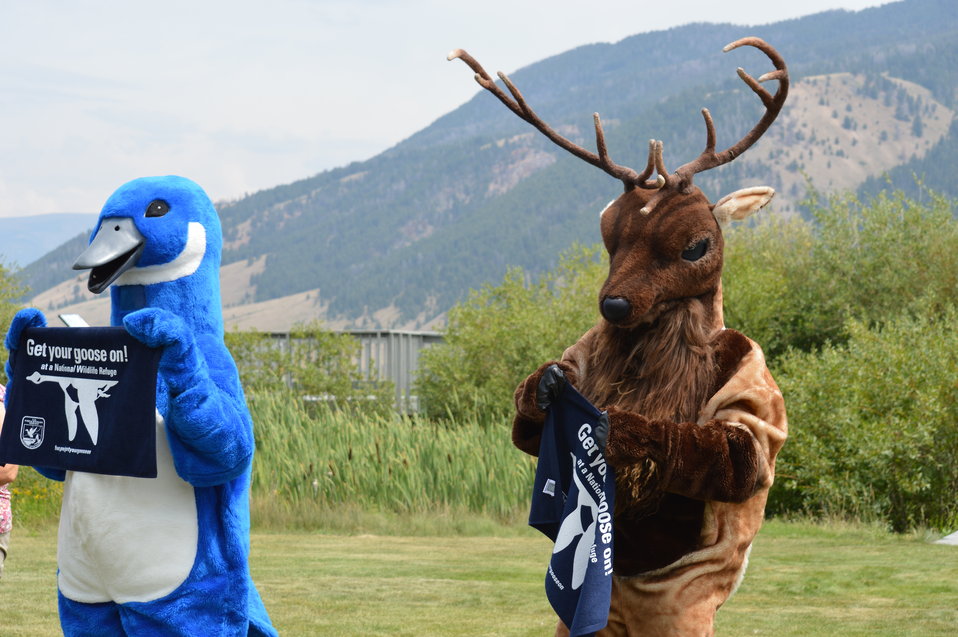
Get Your Goose On! - National Elk Refuge Style

On August 10, 2012 the U.S. Fish and Wildlife Service and Partners celebrated the 100 year anniversary of the establishment of the National Elk Refuge. In these photos, young attendees, along with Puddles the Blue Goose and the National Elk Refuge's mascot, showed us how to Get Your Goose On! with style.